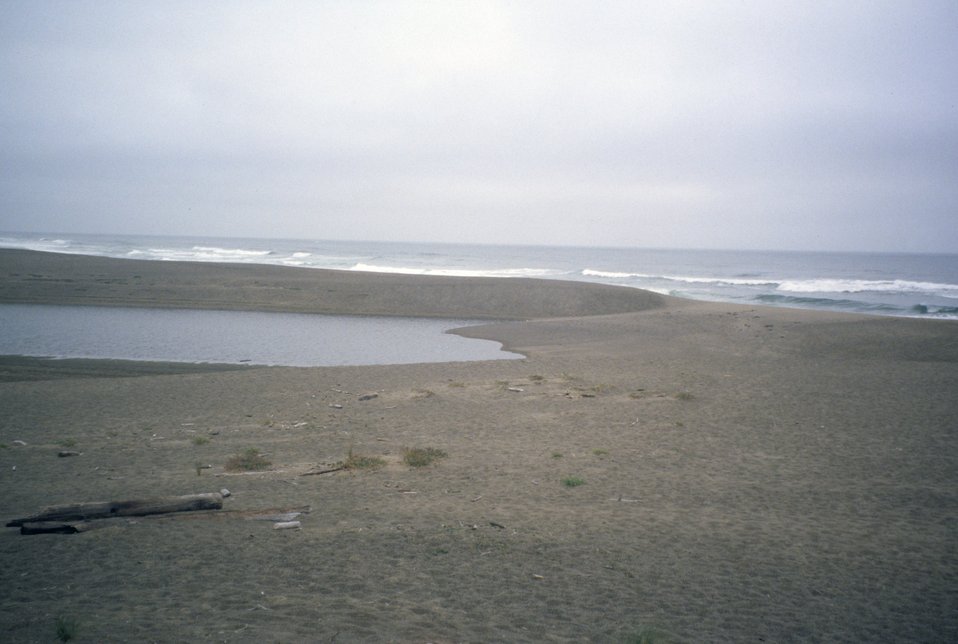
Point Reyes Great Beach